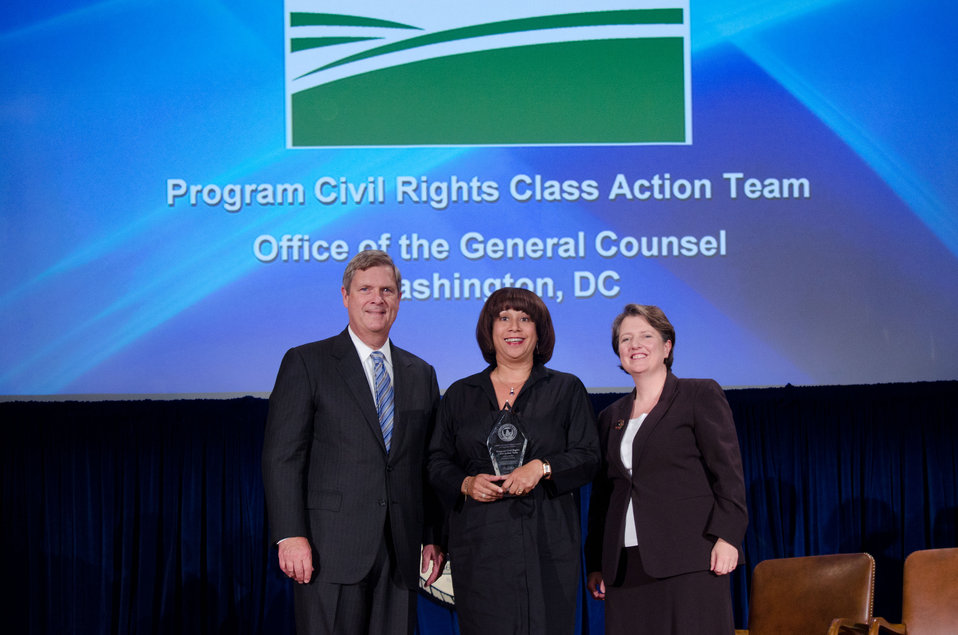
Agriculture Secretary Tom Vilsack (l) and Deputy Secretary Kathleen Merrigan (r), presents the Award to Program Civil Rights Class Action Team, Office of the General Counsel, Washington, DC. Inga P. Bumbary-Langston, Group Leader, For outstanding dedication and cooperation in successfully resolving years of contentious class action litigation by developing meaningful paths for monetary and programmatic relief that will benefit future generations of farmers. On Wednesday, September 14, 2011 in the Jefferson Auditorium at the US Department of Agriculture in Washington, DC.